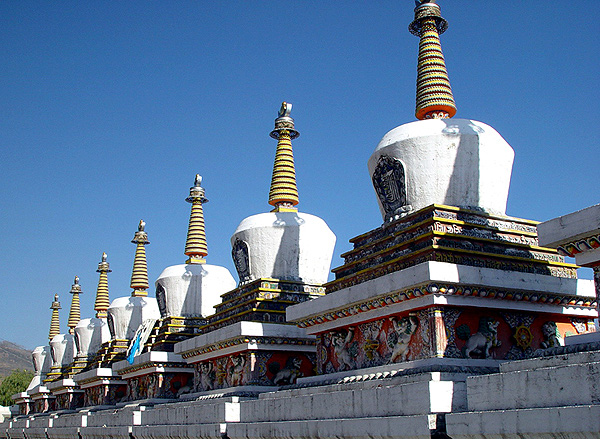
中文: 青海塔尔寺 本图像由上传人User:Xchunyu的友人黄晓波提供，已获得原著作人授权使用。